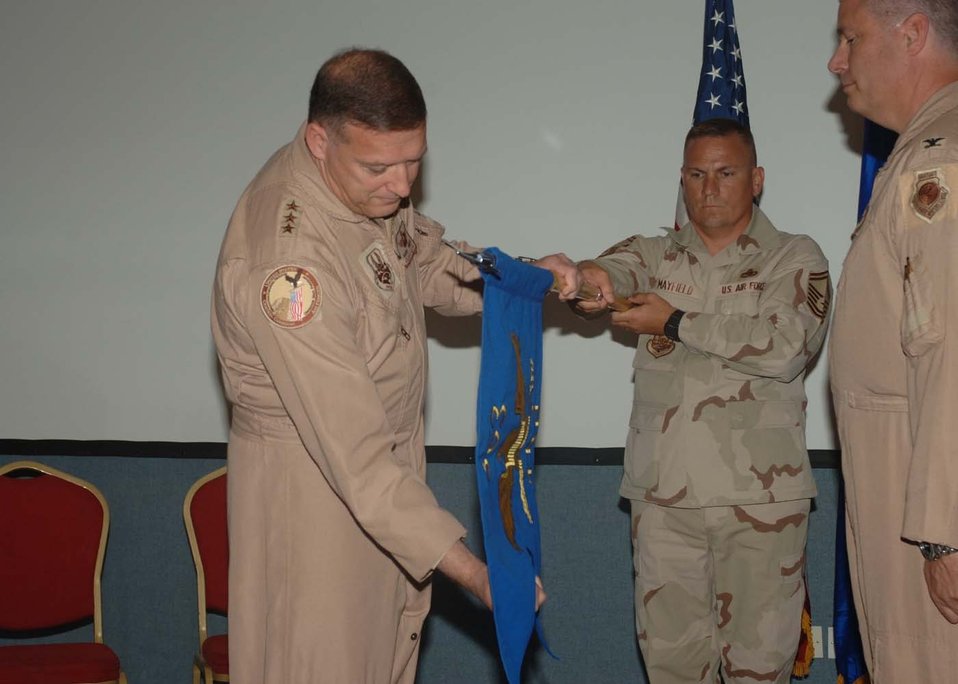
Stand-up of training group marks an international homecoming

To activate the 363rd Training Group in an official ceremony March 26, U.S. Central Command Air Forces Commander Lt. Gen. Gary North unfurls the unit colors as Col. Michael Cosby, right, stands ready to assume command. The 363rd TG was stood-up on an air base in the Persian Gulf region to facilitate the training of airmen from various nations.